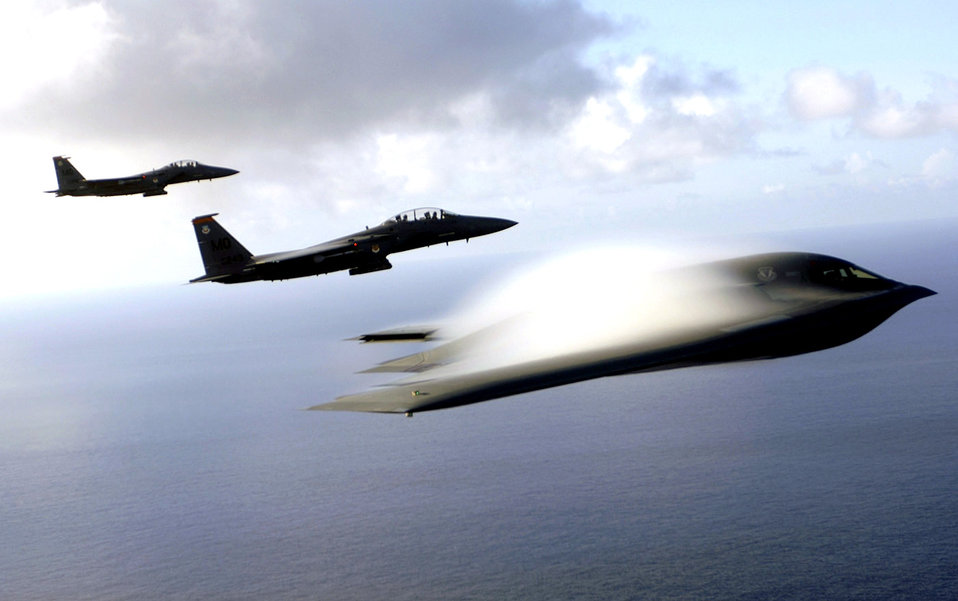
Formation

ANDERSEN AIR FORCE BASE, Guam -- A B-2 Spirit and F-15E Strike Eagles fly in formation across the Pacific Ocean. The deployed fighters and bomber represent Pacific Air Force's projection of Global Strike and resolve for U.S. allies in the Pacific theater.